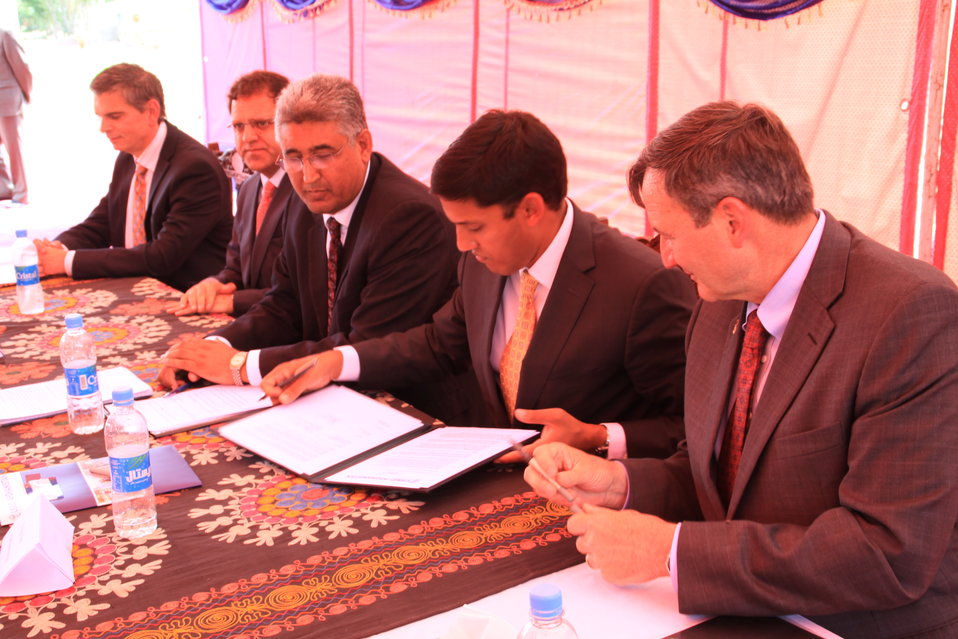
Badam Bagh Farm